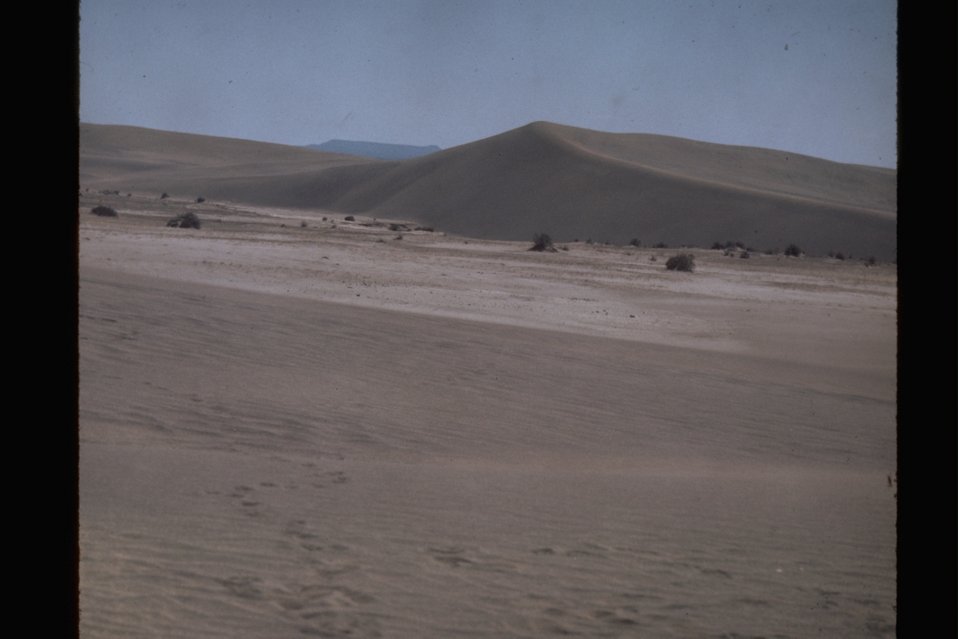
Lost Forest Research Natural Area.